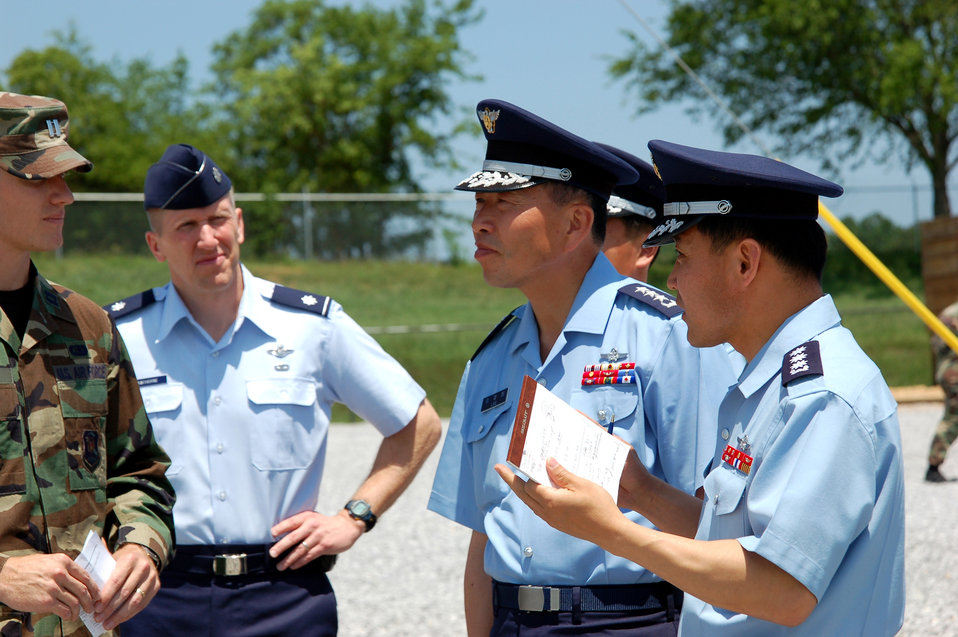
Training programs welcome international interest

(From left) Capt. Kenneth Walker and Lt. Col. Kim Hawthorne discuss training activities on Monday, May 1, 2006, with Lt. Gen. Youngha Lee and Col. Mukyum Kim at Maxwell-Gunter Air Force Base, Ala. Captain Walker and Colonel Hawthorne are with the Officer Training School. General Lee is commander of the Republic of South Korea Headquarters for Air Force Education and Training Command in Jinju. Colonel Kim is the air attache to the United States' Korean Embassy in Washington, D.C.